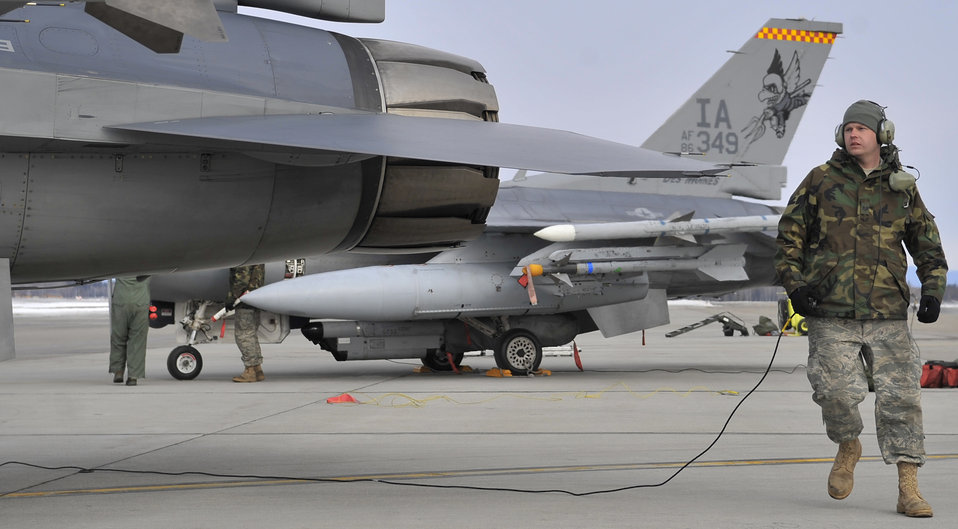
Making it happen: RF-A Maintainers

Staff Sgt. James George performs a walk-around inspection of an F-16 Fighting Falcon that had returned from a mission April 17 during Red Flag-Alaska at Eielson Air Force Base, Alaska. Red Flag-Alaska is a Pacific Air Forces-directed field training exercise for U.S. and coalition forces flown under simulated air-combat conditions. Sergeant George is a crew chief from the Iowa Air National Guard's 132nd Fighter Wing from Des Moines.